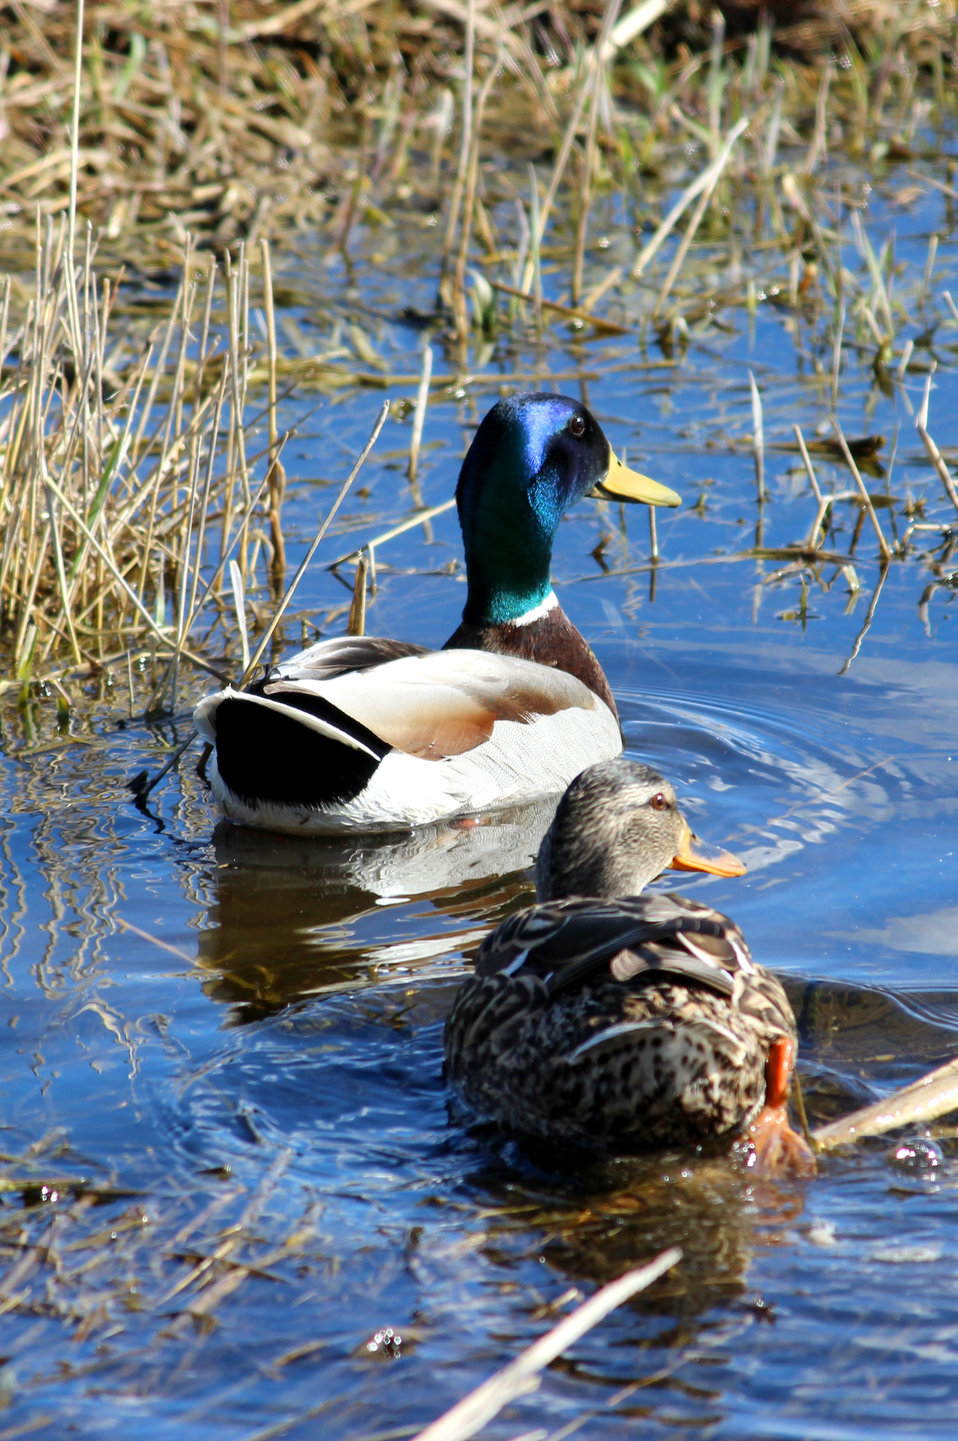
A Watchful Eye

Mallards are one of the most common ducks in the Kulm Wetland Management District. They are found in puddles as small as a kiddie pool to wetlands that go on for miles. These ducks pair up in the fall, court throughout the winter, and mate in the spring. The hens have started nesting now in early May, and will lay between 8-10, up to 13 eggs, in a down-lined nest on the ground, which is hidden in the grass.